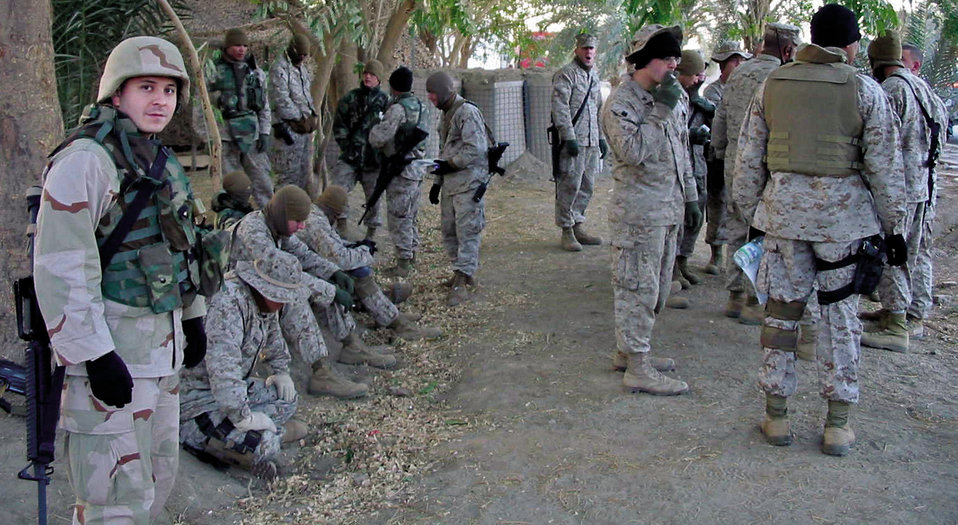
Contracting officer experiences frontline action in Iraq

IRAQ -- First Lt. Ed Ruckwardt and other members of the 1st Marine Expeditionary Force take a break after sweeping an area. The lieutenant's primary job is to purchase items for the Iraqi security forces in the western portion of the country. He is deployed from 82nd Contracting Squadron at Sheppard Air Force Base, Texas.